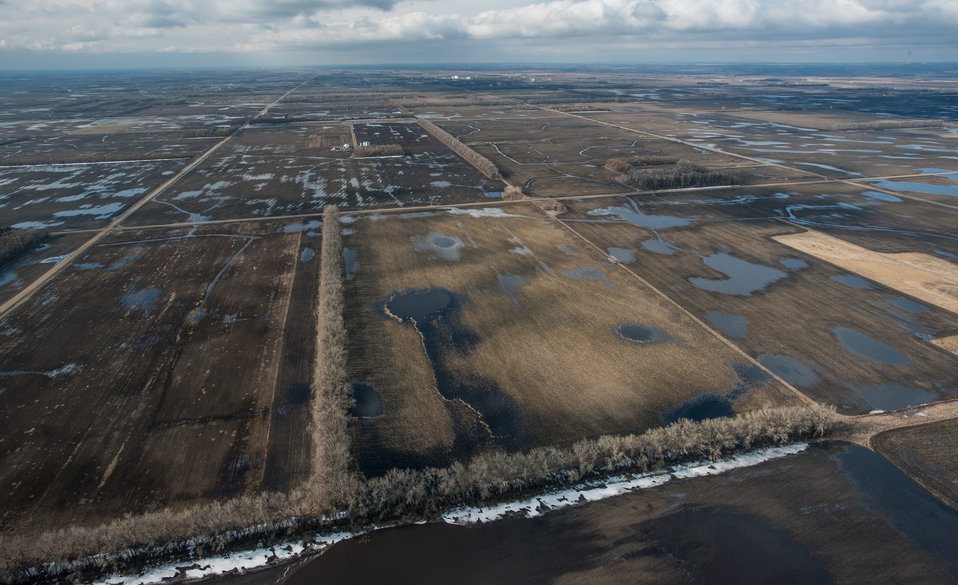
Wetlands and windbreaks along the Turtle River Watershed in Grand Forks County, ND, part of the Red River basin, on Wednesday, May 1, 2013.